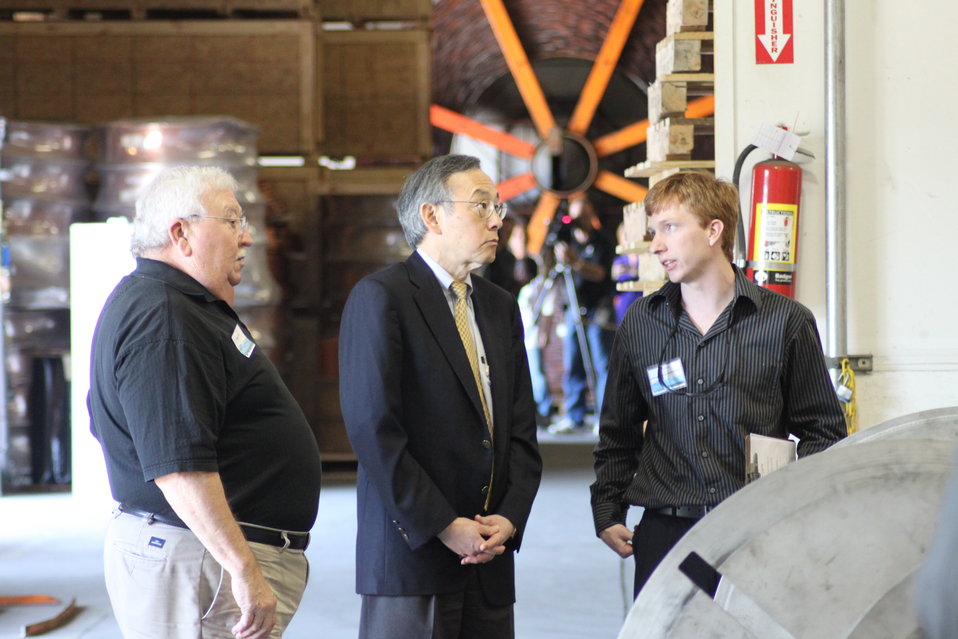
Norm 008